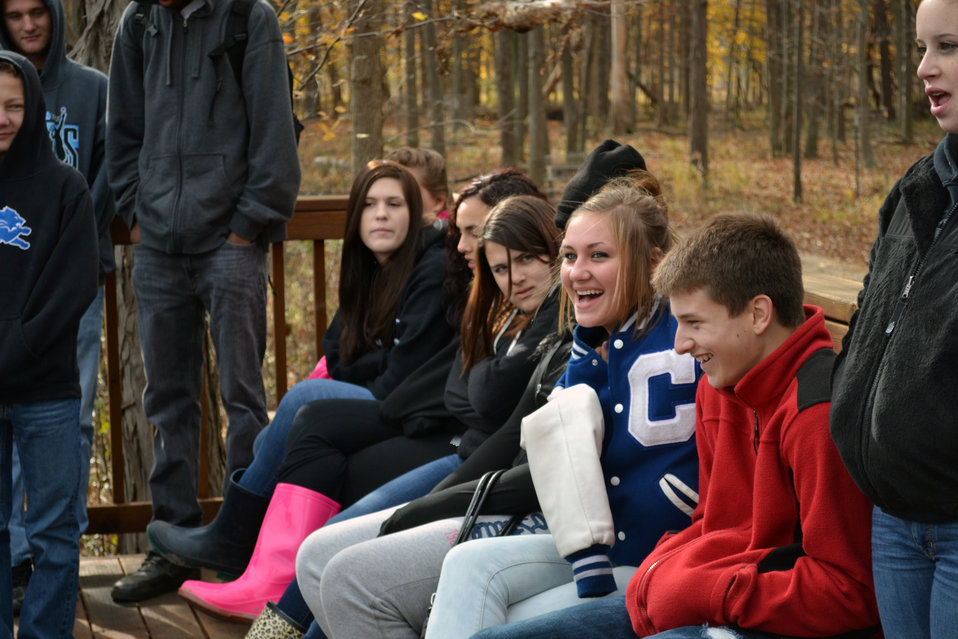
Future conservationists

Students from Carlson High School cam out to mark the occasion.